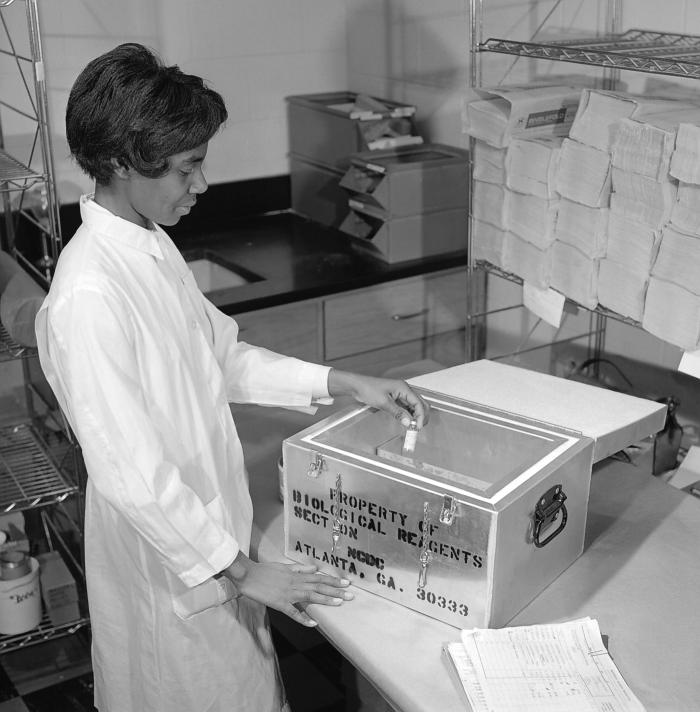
This historic image created in 1964, depicted a laboratory technician at work in one of the Centers for Disease Control's laboratories. The technician was in the process of packing a number of reagents in an insulated container for shipping.